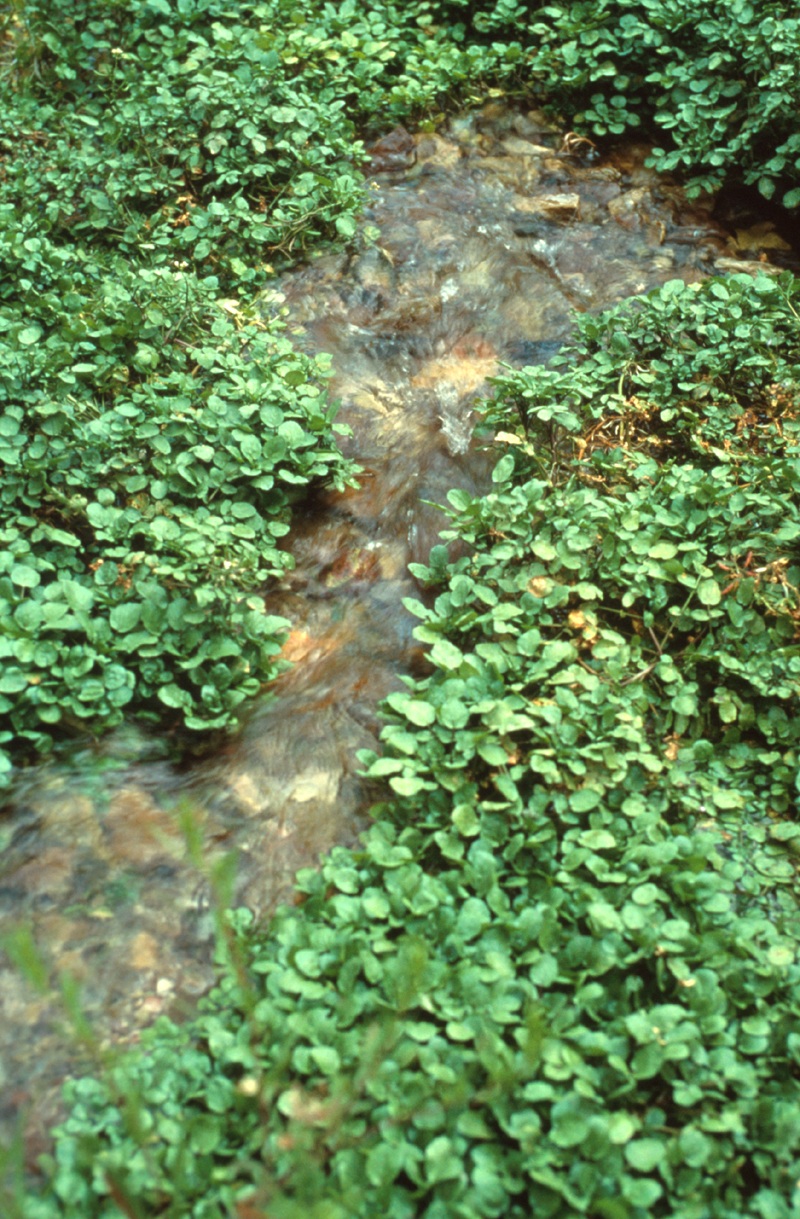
South Fork of the Snake River